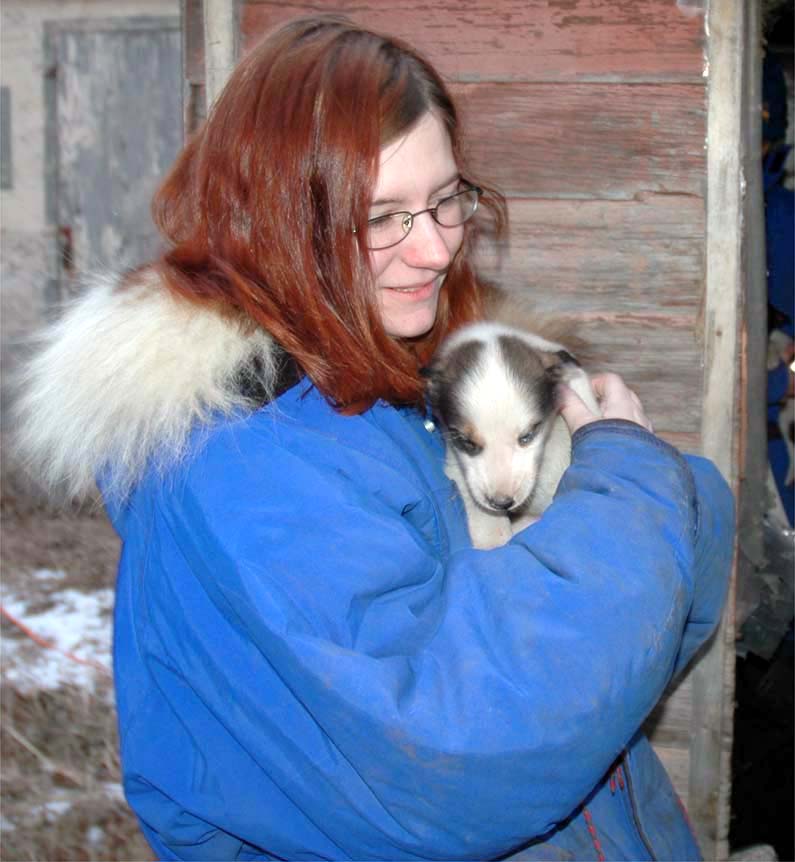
Airman's hobby goes to the dogs

DEERING, N.D. -- Senior Airman Kimberly Williams spends time with of one of the newest sled dogs. The dog, owned by Senior Airman Mary Lunde, is one of more than a dozen sled dogs that they train with weekly. Aiman Lunde hopes to one day race in the Iditarod. The Airmen are assigned to the 5th Munitions Squadron at nearby Minot Air Force Base.